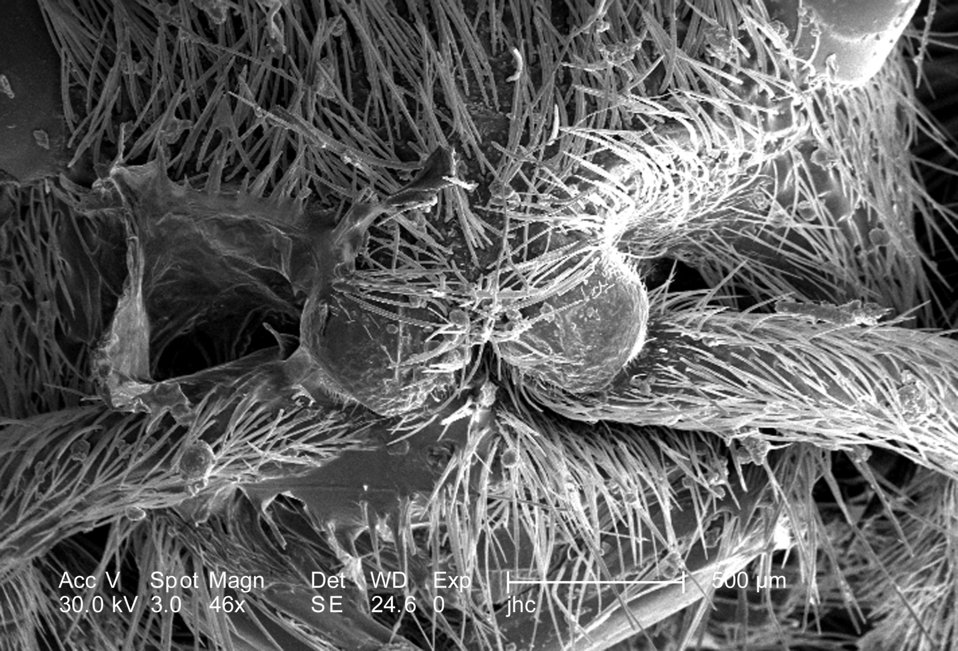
At a low magnification of only 46X, this scanning electron micrograph (SEM) showed the head region from an anterior view of a female velvet ant, Dasymutilla sp.. Note the two laterally positioned eyes which are partially visible at the topmost area of the photograph, but it's the two anteriorly-placed antennae with their rounded "scapes" that are the most apparent head appendages. Like the antennae, the numerous 'hairs' or setae adorning almost all of the insect's exterior surfaces, act as sensory structures, supplying the organism with information about its environmental parameters. The jointed legs, from which the insects Phylum Arthropoda is derived, i.e., Arthro = 'jointed', and poda 'leg', are also partially visible, emanating from the thoracic region.